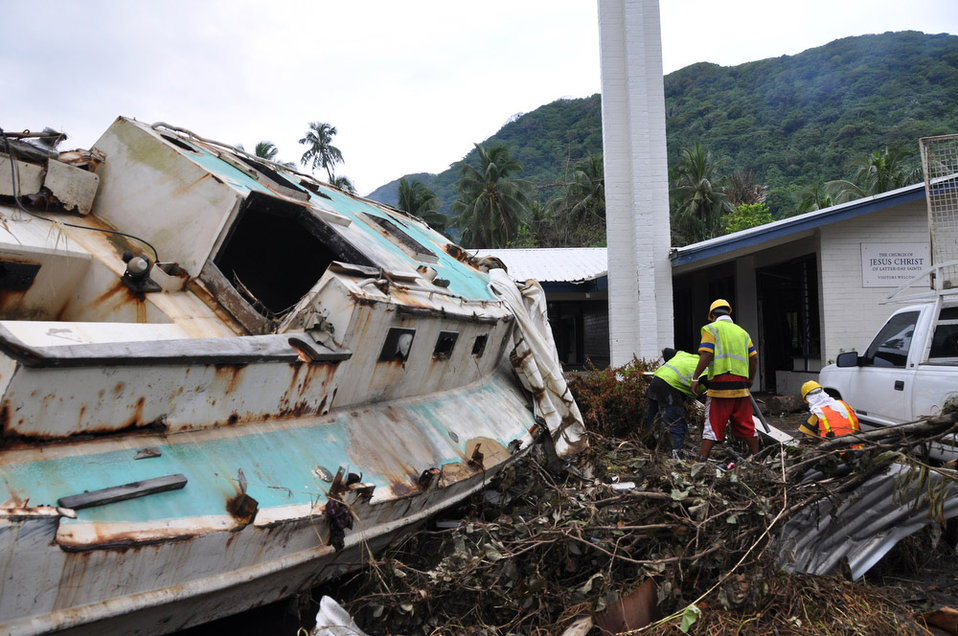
Hawaii Guard members assess damages in American Samoa

A boat and trash sit in the front parking lot of a church after a tsunami caused a great amount of structural damage to the island and its villages Oct. 1, 2009, in Pago Pago, American Samoa .